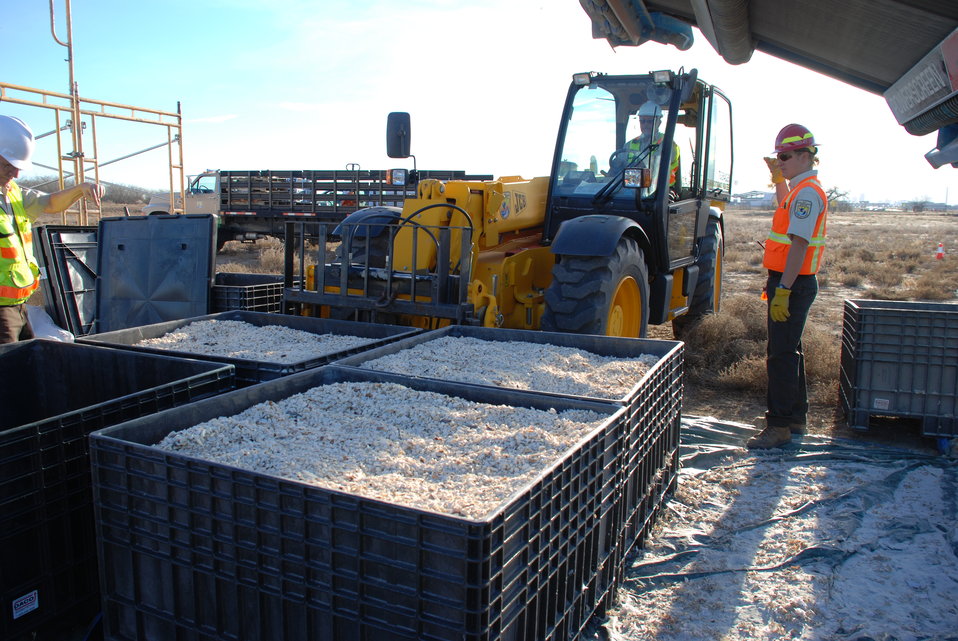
Ivory Crush 2013